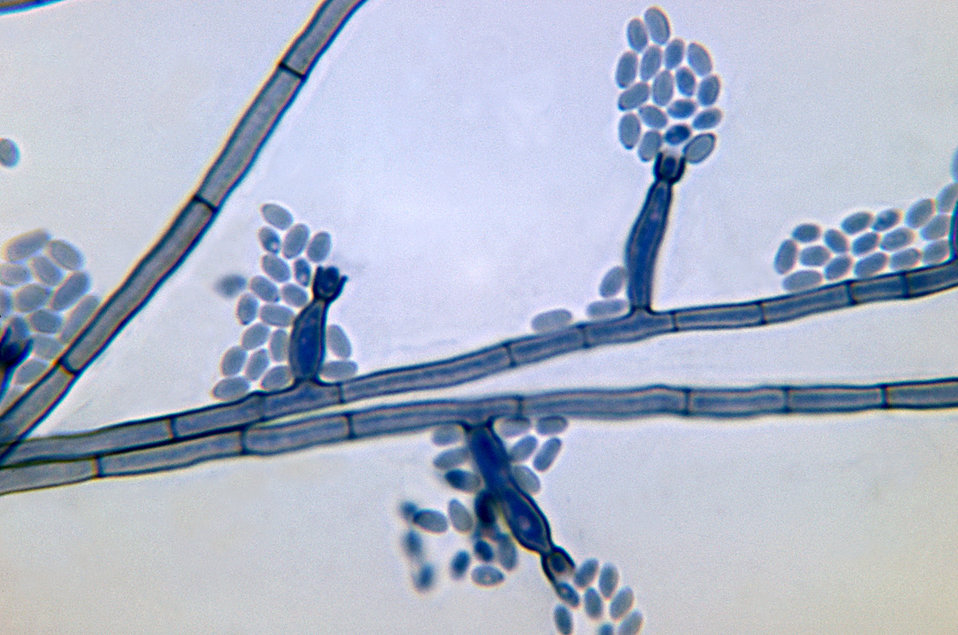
This photomicrograph depicts conidia-laden conidiophores of a Phialophora verrucosa fungal organism from a slide culture.